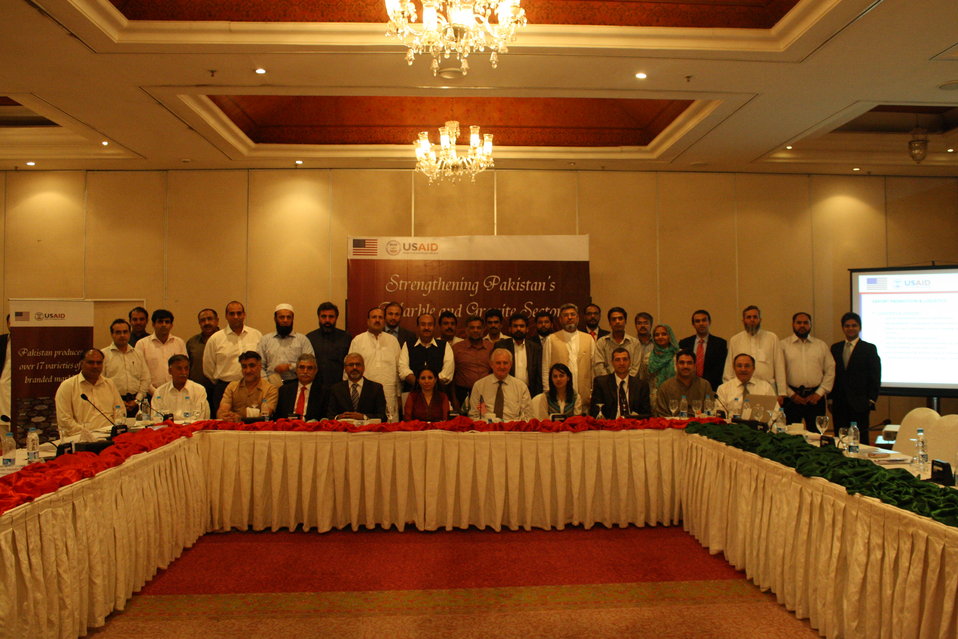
First Consultative Meeting with Marble and Granite Sector Stakeholders 1